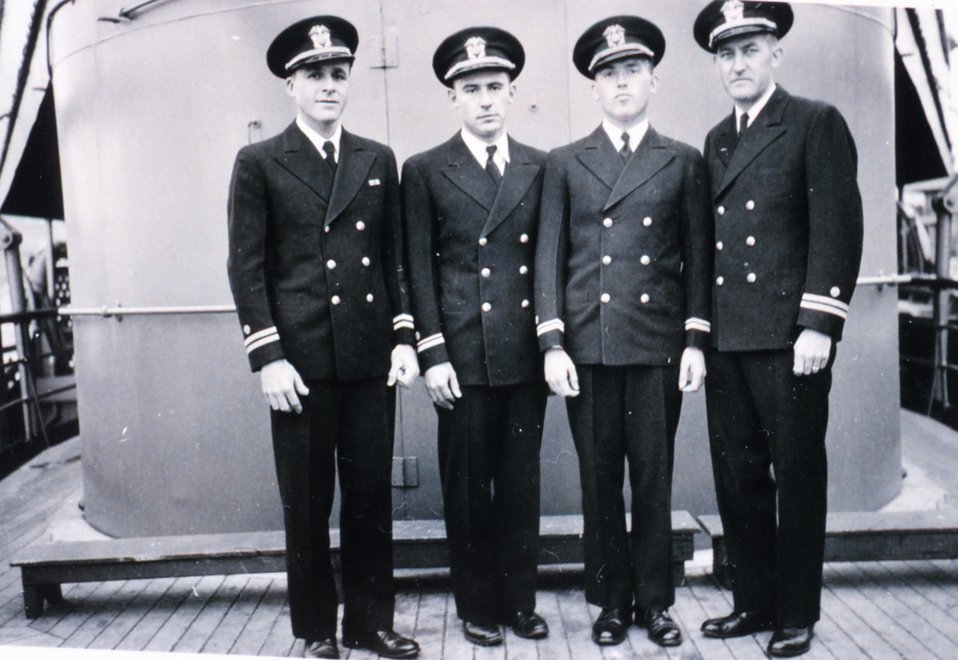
L to R - Lt. Philip A. Weber, Lt. (j.g.) John E. Schultz, Lt. (j.g.) Edwin A. Dorner, and Lt. Raymond M. Stone. Part of wardroom of C&GS Ship EXPLORER. September 1945, Massacre Bay, Attu.